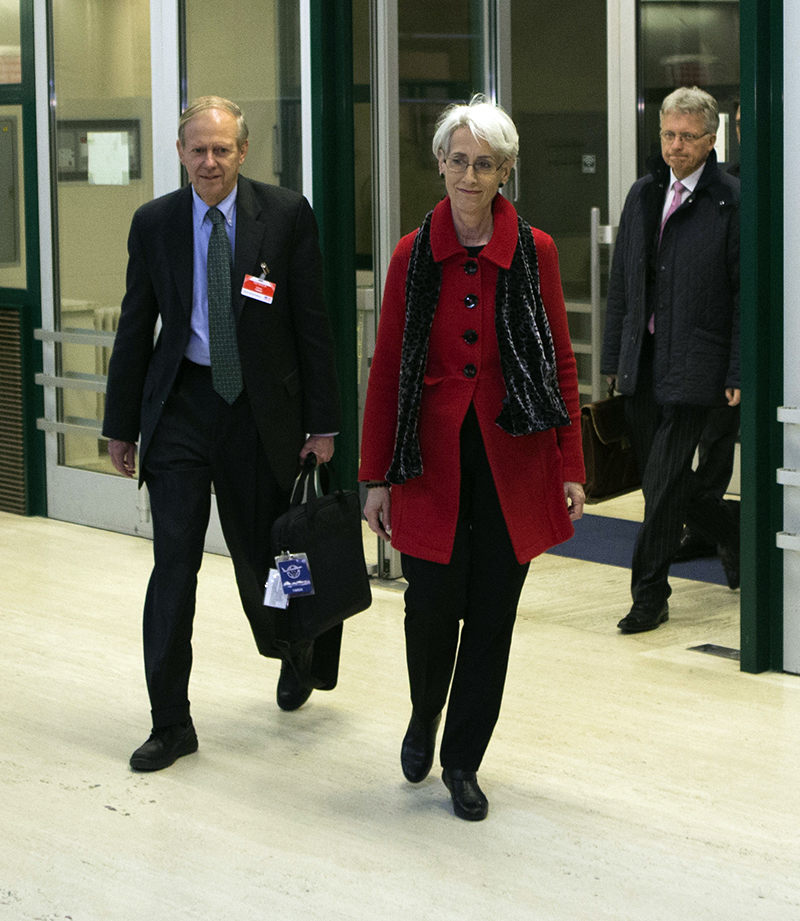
Under Secretary Sherman Leads the U.S. Delegation to the P5 1 Talks With Iran

Under Secretary of State for Political Affairs Wendy Sherman arrives in Geneva, Switzerland, to lead the U.S. delegation to the P5 1 talks with Iran on November 20, 2013.